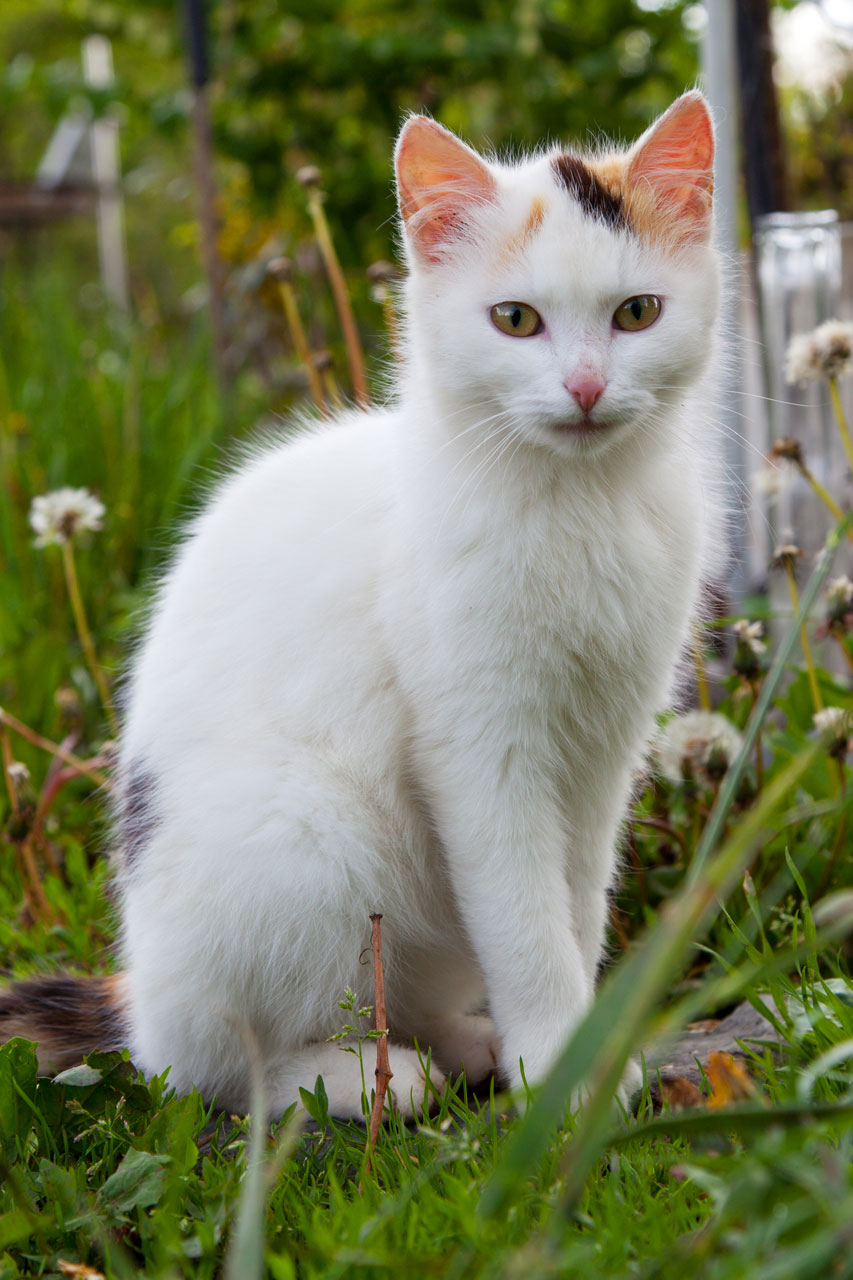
White cat sitting

Young white cat sitting on the garden.